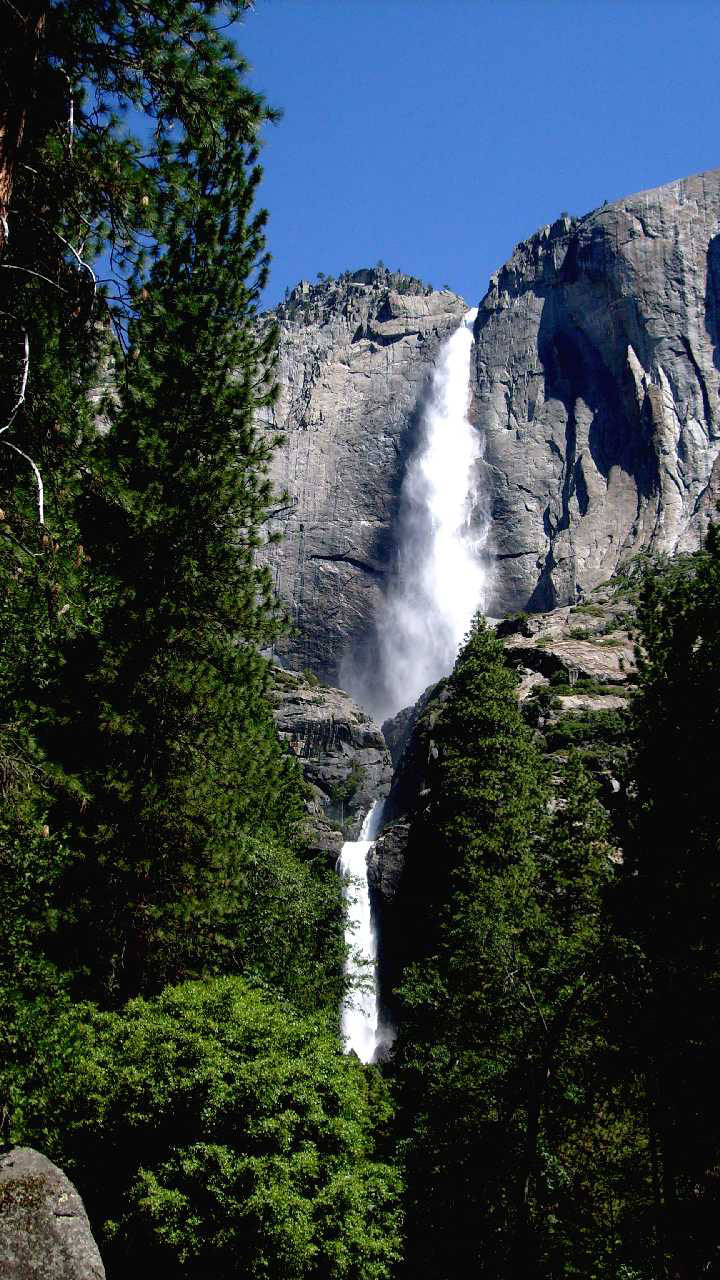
Yosemite falls, upper & lower

Taken july 3, 2010, a heavy melting northern california, usa winter snowpack makes for a very scenic waterfall for early summer..